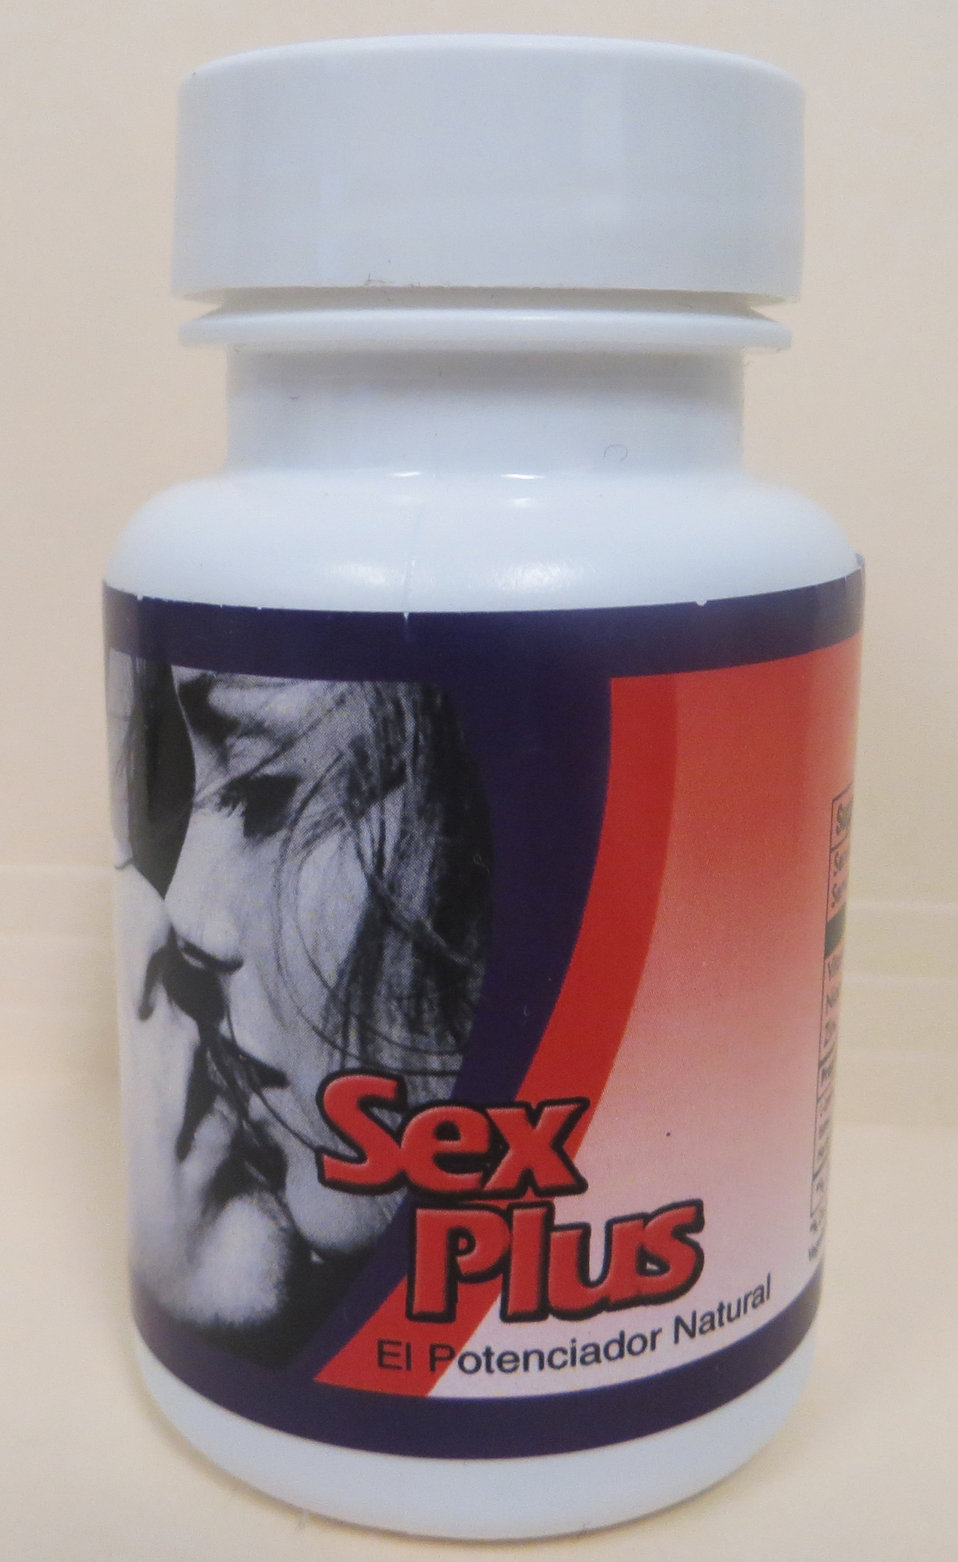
Sex Plus

April 25, 2013 - The FDA is advising consumers not to purchase or use 'Sex Plus,' a product promoted and sold for sexual enhancement. The product was found to contain undeclared sulfosildenafil and dimethylacetildenafil. For more information, go to www.fda.gov/Drugs/ResourcesForYou/Consumers/BuyingUsingMe...

And read this Consumer Update: Beware of Fraudulent ‘Dietary Supplements’